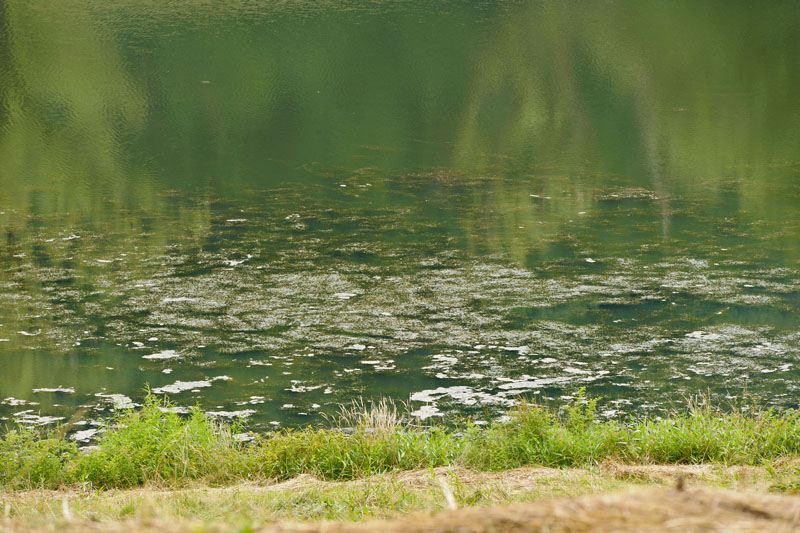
Algae bloom on farm pond. North western West Virginia. 2012 USEPA photo by Eric Vance